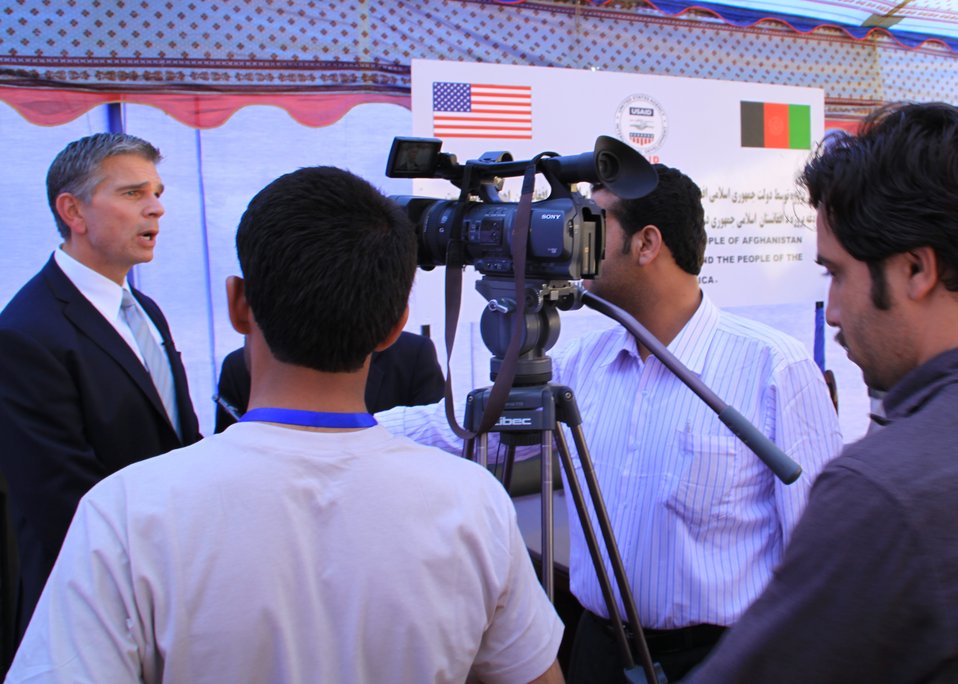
105 MW Tarakhil Power Plant Handover